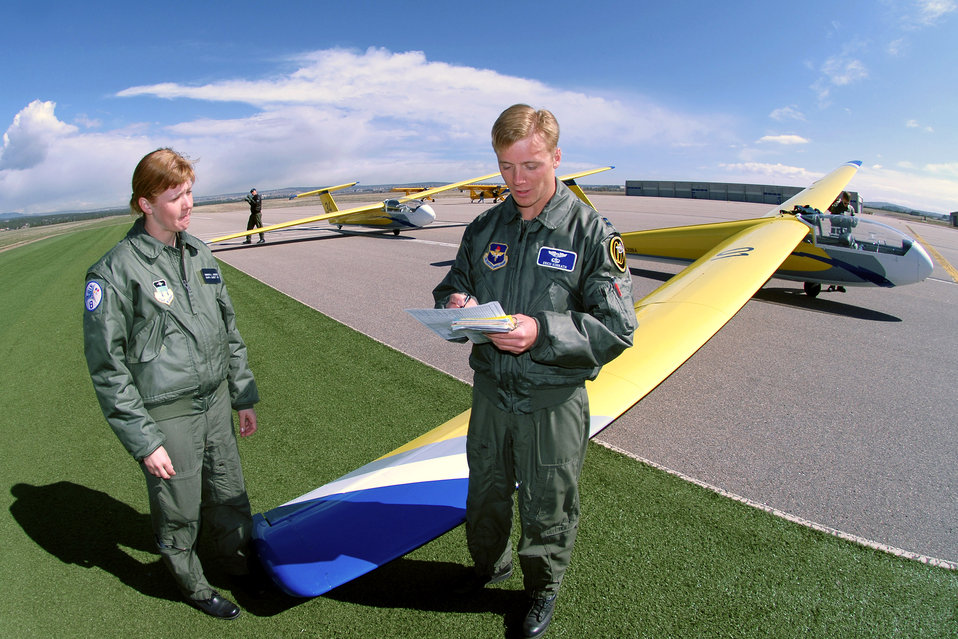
Gliders help future Air Force leaders soar

Capt. Erich Kunrath, an instructor pilot with the 94th Flying Training Squadron, reviews a grade card with basic soaring student, Sophomore Samantha Saenger, after a training sortie at the U.S Air Force Academy, Colo. The 94th FTS conducts more than 15,000 training and competition glider sorties annually, focused on developing the leadership and character of more than 4,000 USAFA and ROTC cadets.